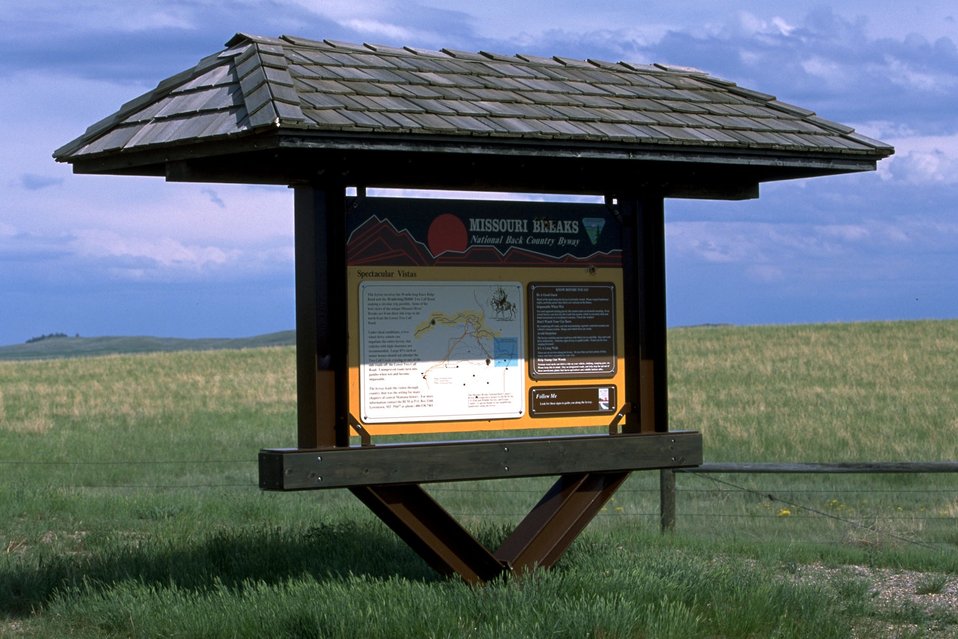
Kiosk along Knox Ridge Road in the Missouri Breaks Back County Byway